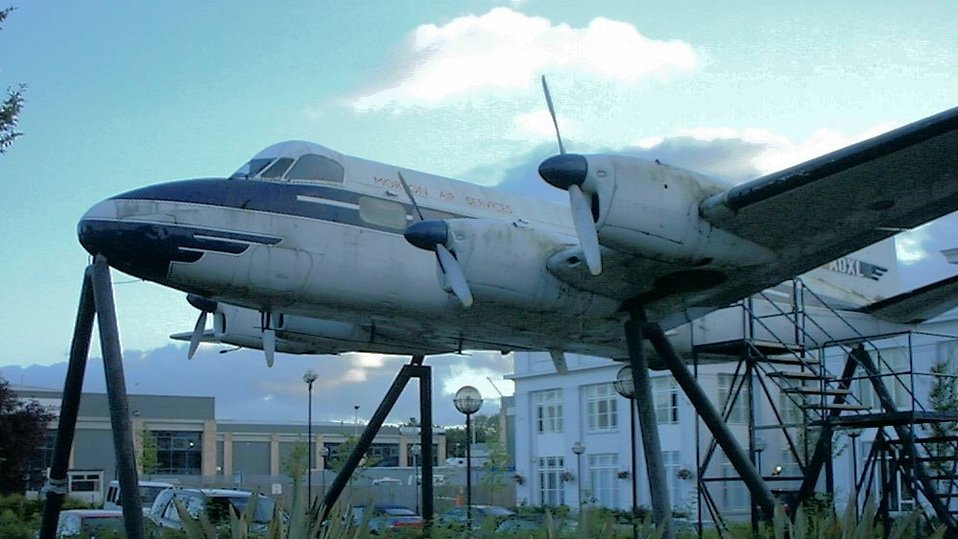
026155 heron croyport